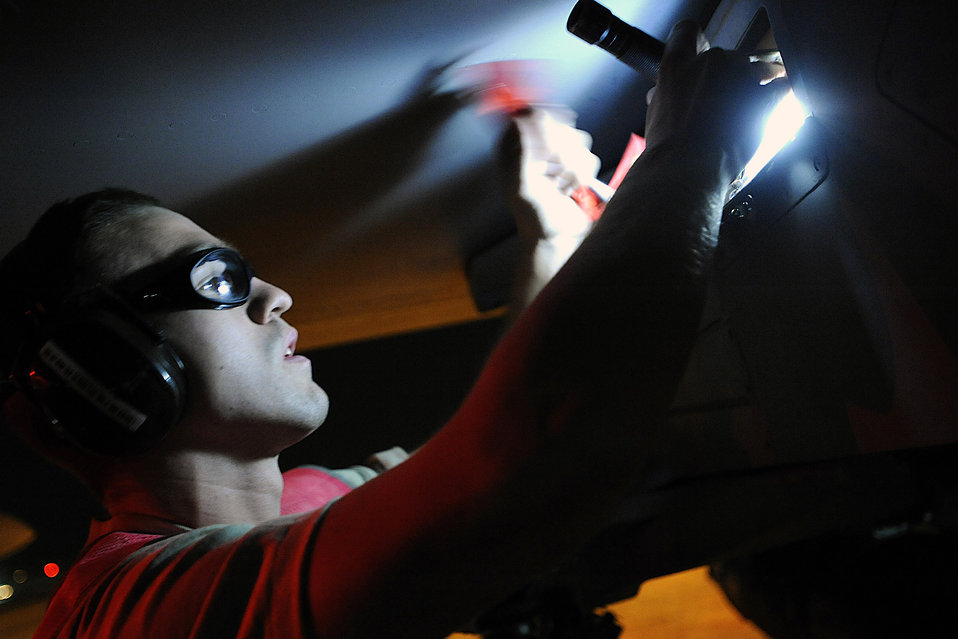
Gotcha!

Senior Airman Johnny Powell retrieves a